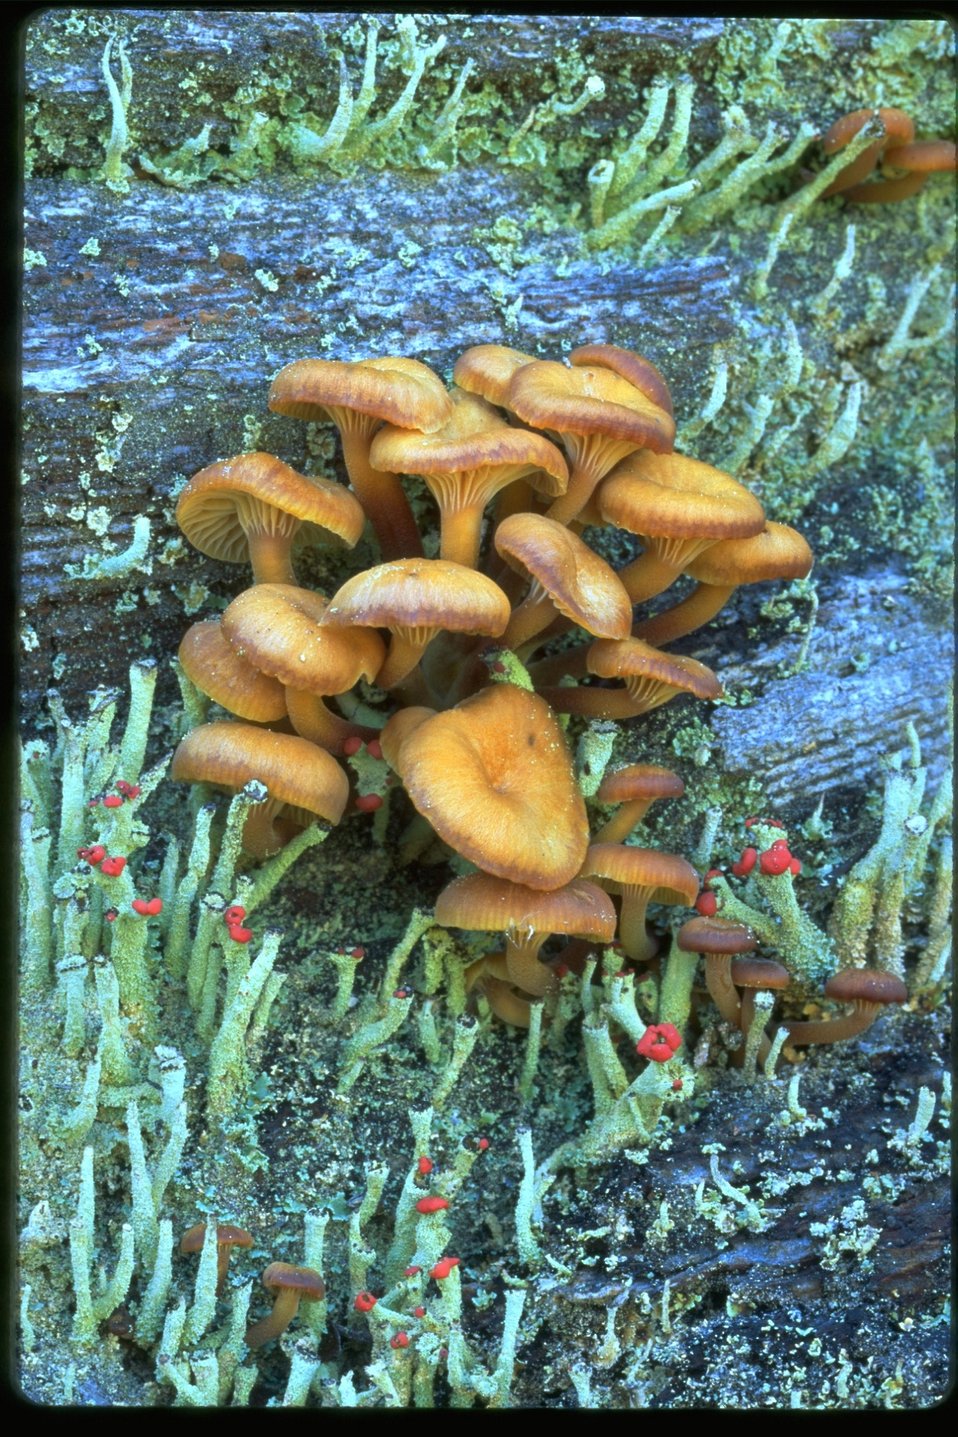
Small clump of mushrooms growing in grassy area.